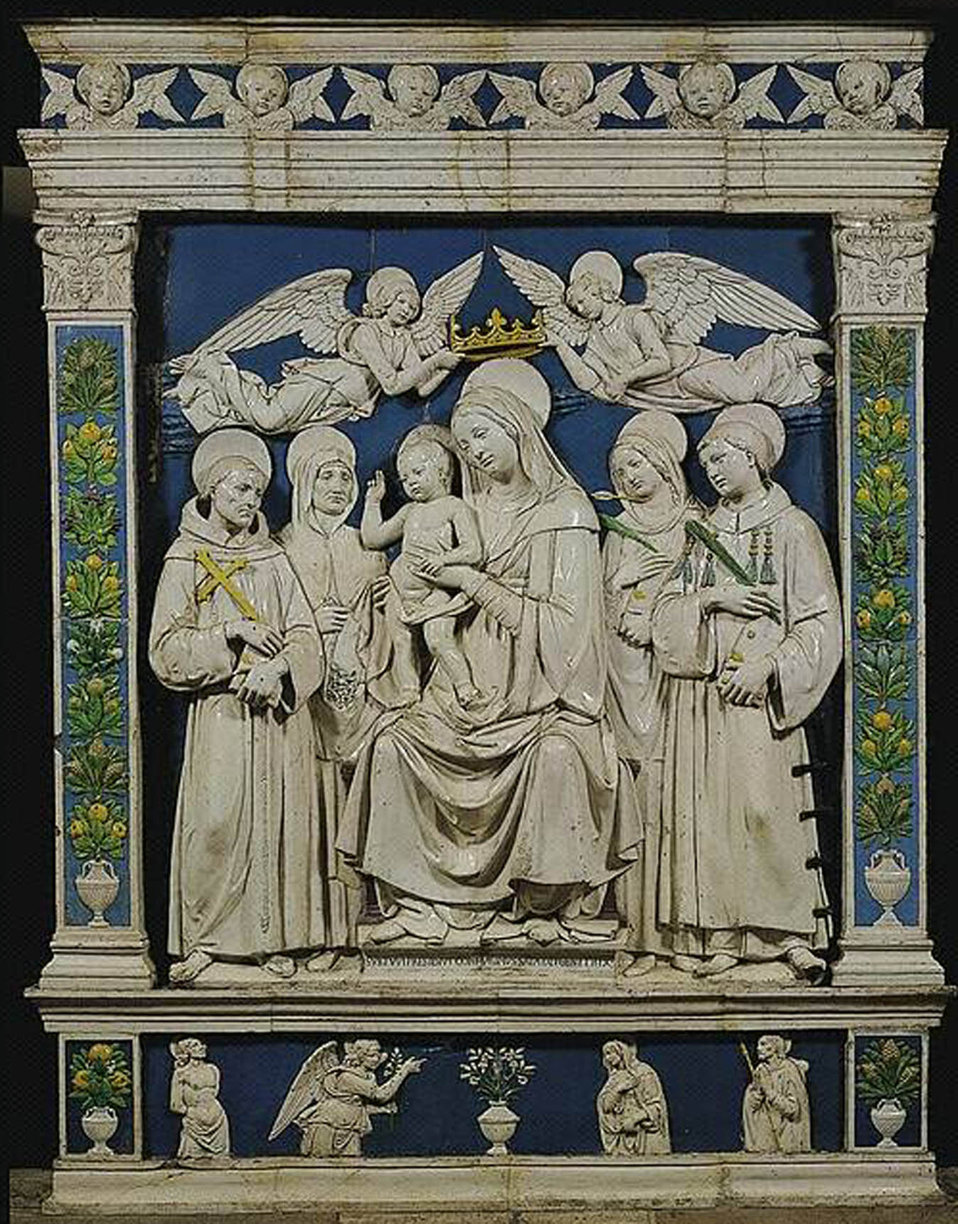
see title